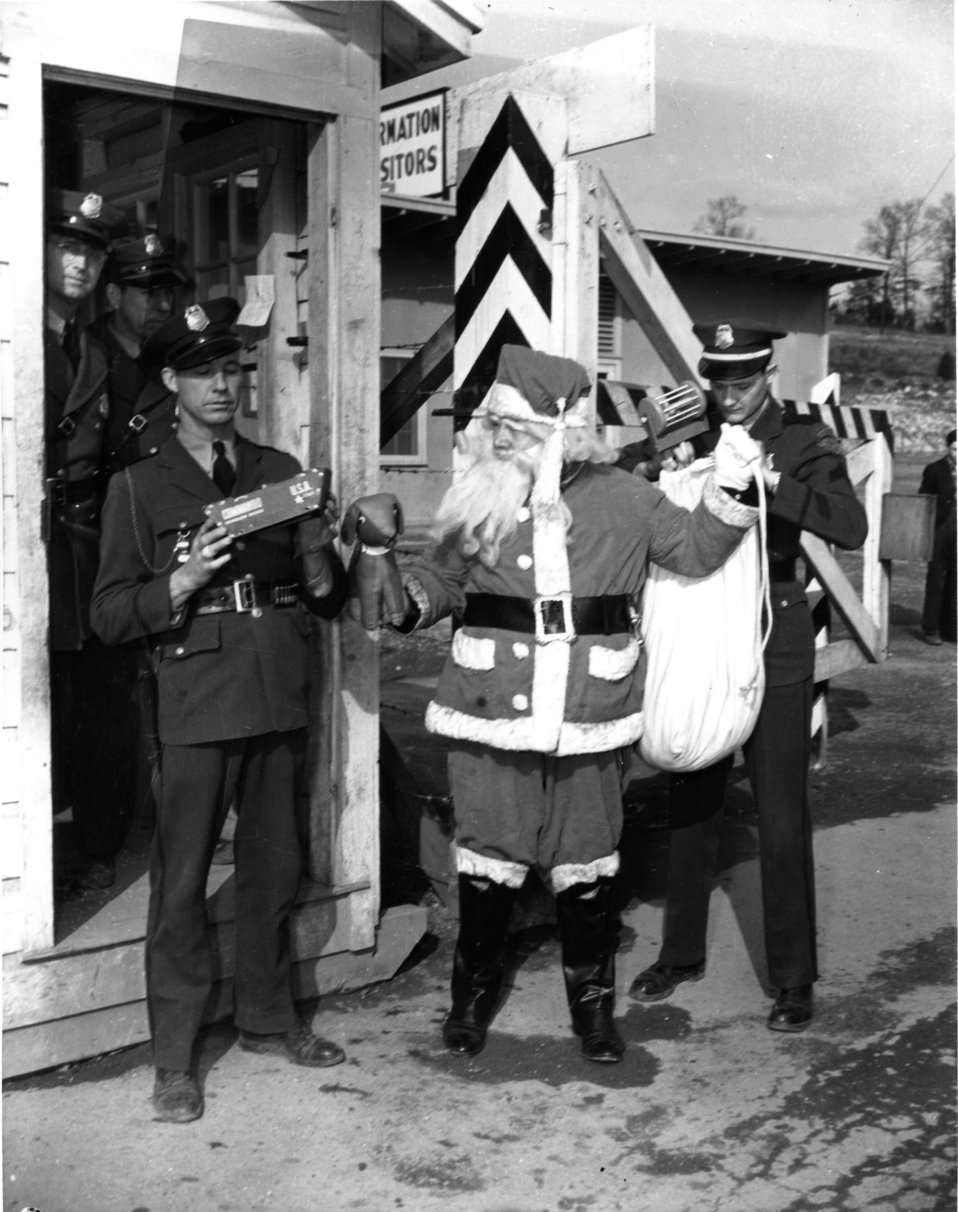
Recreation at Oak Ridge